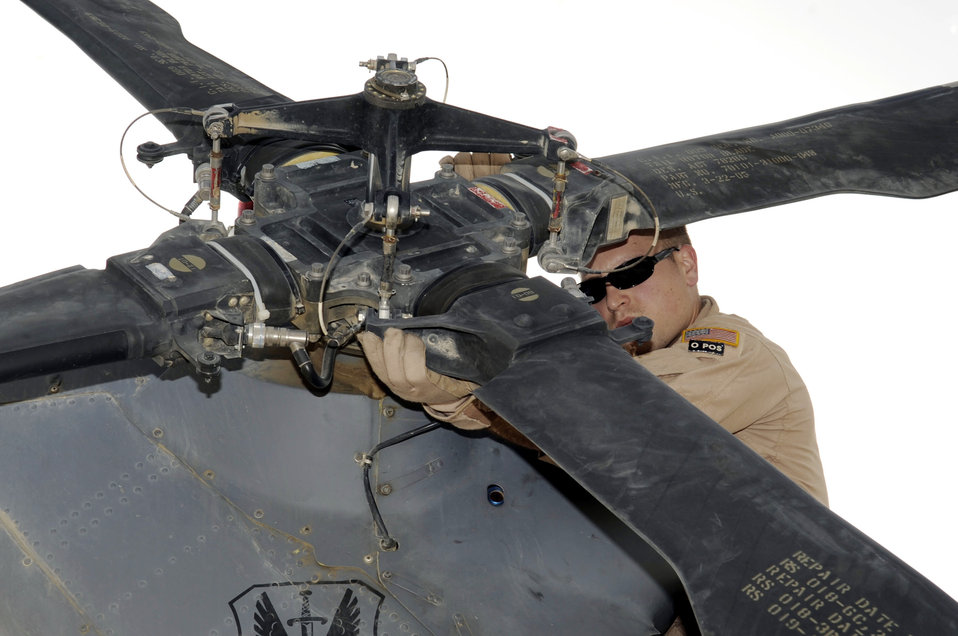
Checking the rotor

Tech. Sgt. William Nabakowski, an aerial gunner with the 66th Expeditionary Rescue Squadron, conducts a routine preflight check on a HH-60G Pave Hawk helicopter March 5, 2010, at Kandahar Airfield, Afghanistan. Sergeant Nabakowski is assigned to the 66th Rescue Squadron from Nellis AFB, Nev.